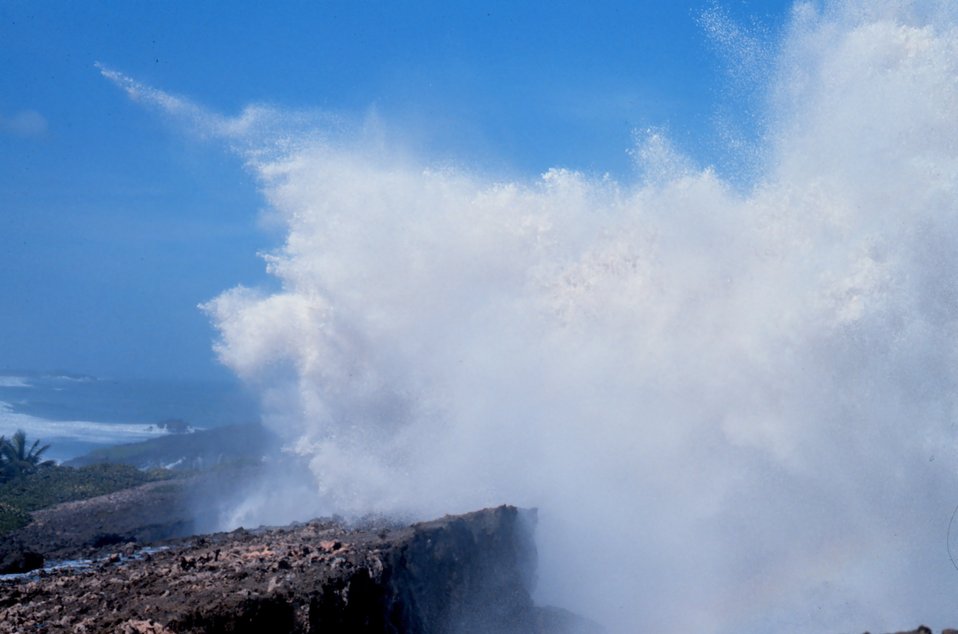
Hurricane surf on the north coast of Puerto Rico. Note palm trees for scale.